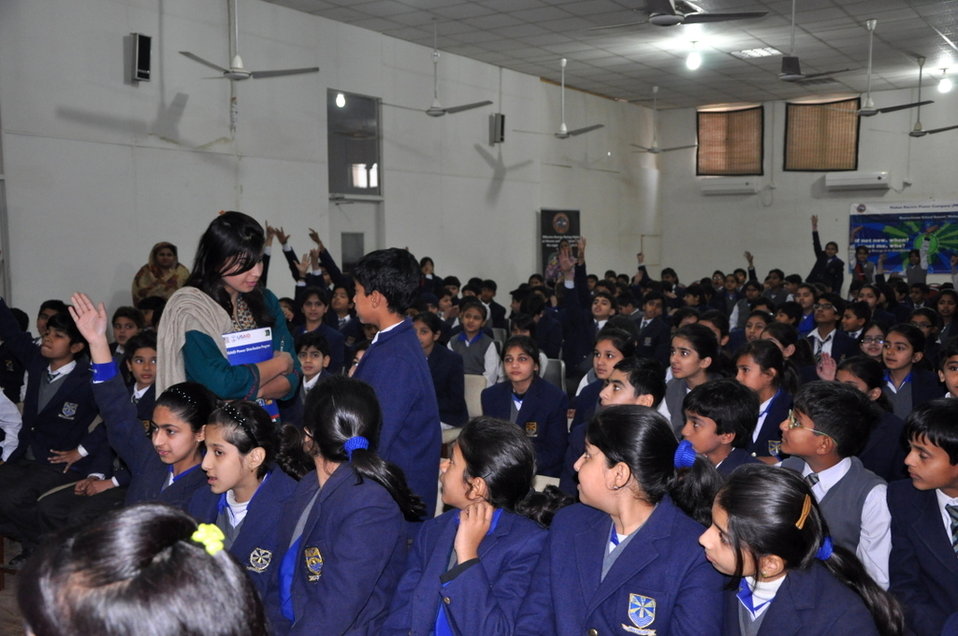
USAID Power Distribution Program-Energy Conservation Seminar Beaconhouse School System, Multan

Multan, January 21, 2013 - the USAID Power Distribution Program with the collaboration of MEPCO, held an Energy Conservation Seminar Beaconhouse School System, Multan
The purpose of the seminar was to:
• Inform students about the USAID Power Distribution Program and the role of Distribution companies in Pakistan.
• Educate students and teachers about the effective energy saving methods they can apply at homes, schools and workplaces.
More than 1000 students along with principal & teachers attended the seminar & participated actively in the quiz session. For the better know how of the students regarding MEPCO & energy sector of Pakistan, a documentary was played during the seminar